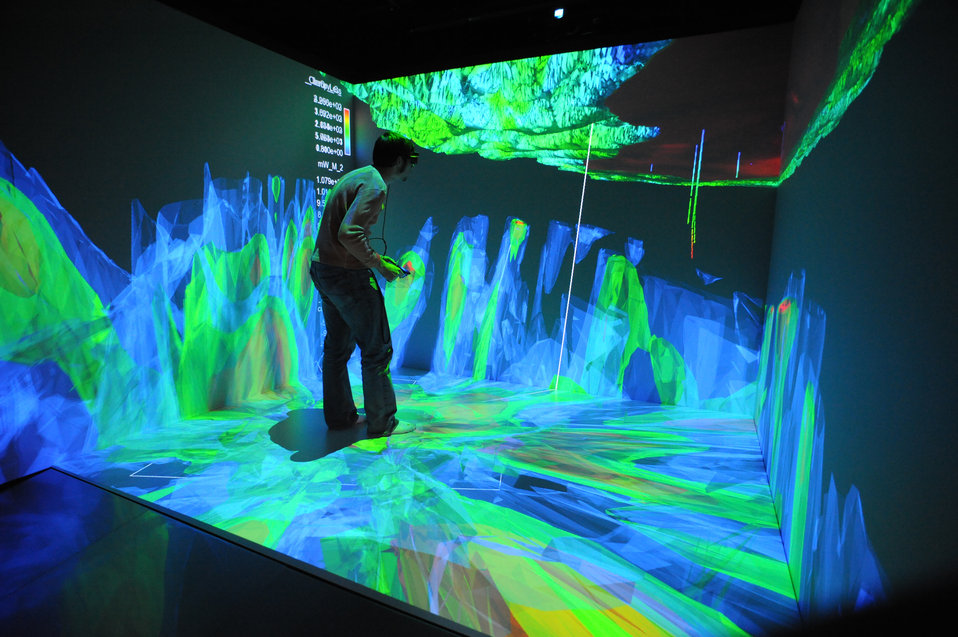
GEOTHERMAL ENERGY MODELING AT IDAHO NATIONAL LABORATORY

INL RESEARCHERS VIEW A SUBSURFACE MODEL IN THE COMPUTER-ASSISTED VIRTUAL ENVIRONMENTAL AT THE CENTER FOR ADVANCED ENERGY STUDIES.